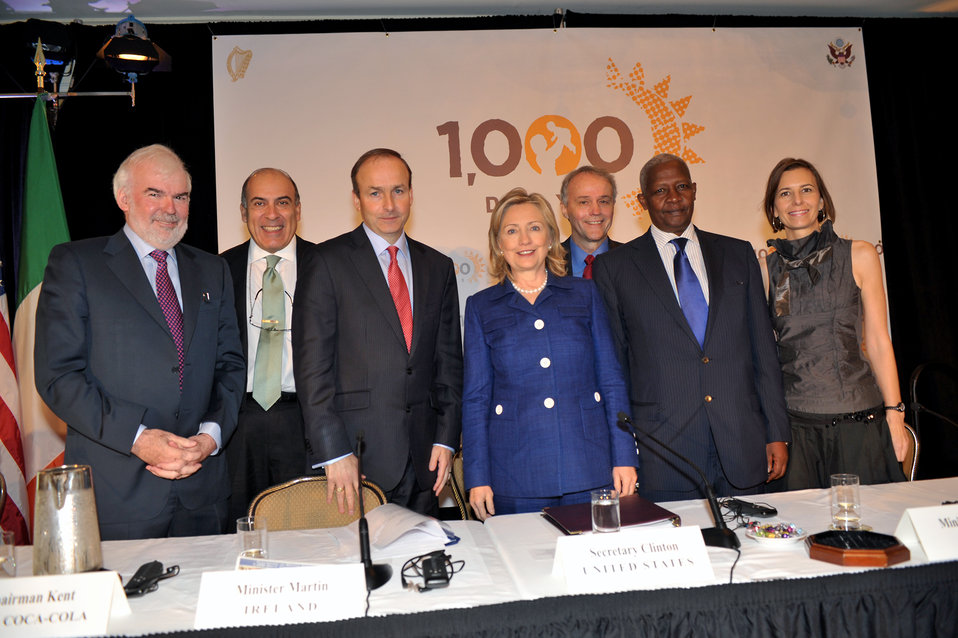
Secretary Clinton Participates in the '1,000 Days: Change a Life, Change the Future' Event

U.S. Secretary of State Hillary Rodham Clinton participates in the event on reducing child undernutrition, '1,000 Days: Change a Life: Change the Future,' which she co-hosted with Irish Foreign Minister Micheal Martin at the InterContinental Hotel in New York, New York, on September 21, 2010.